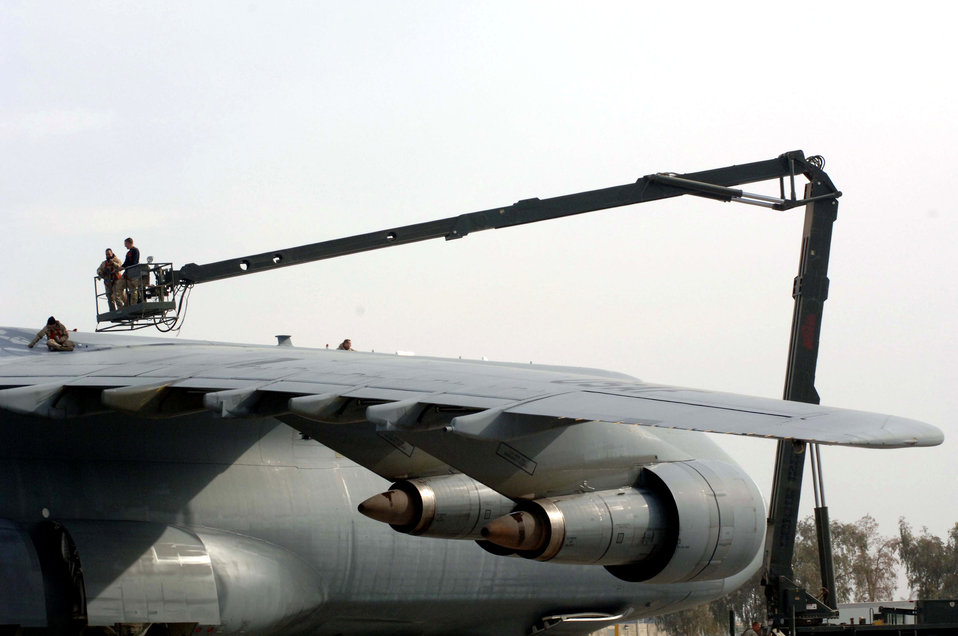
A 'galaxy' far, far away

Members of the 721st Air Mobility Operations Group work to perform maintenance on a C-5 Galaxy Jan. 1 at Balad Air Base, Iraq. The 721st AMOG provides en route maintenance and support for the Air Force's C-5 and C-17 Globemaster III aircraft. The C-5 is one of the largest aircraft in the world and the largest airlifter in the Air Force inventory. The Airmen are deployed from Travis Air Force Base, Calif.